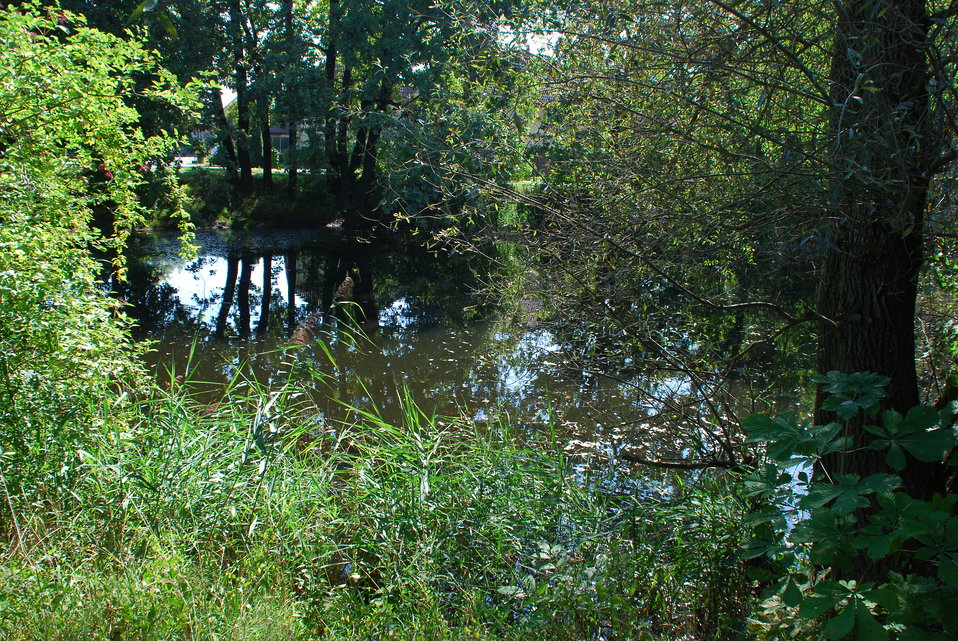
Deutsch: Theaterteich icn Frankfurt (Oder), am ehemaligen Kleist-Theater, Friedrich-Ebert-Straße